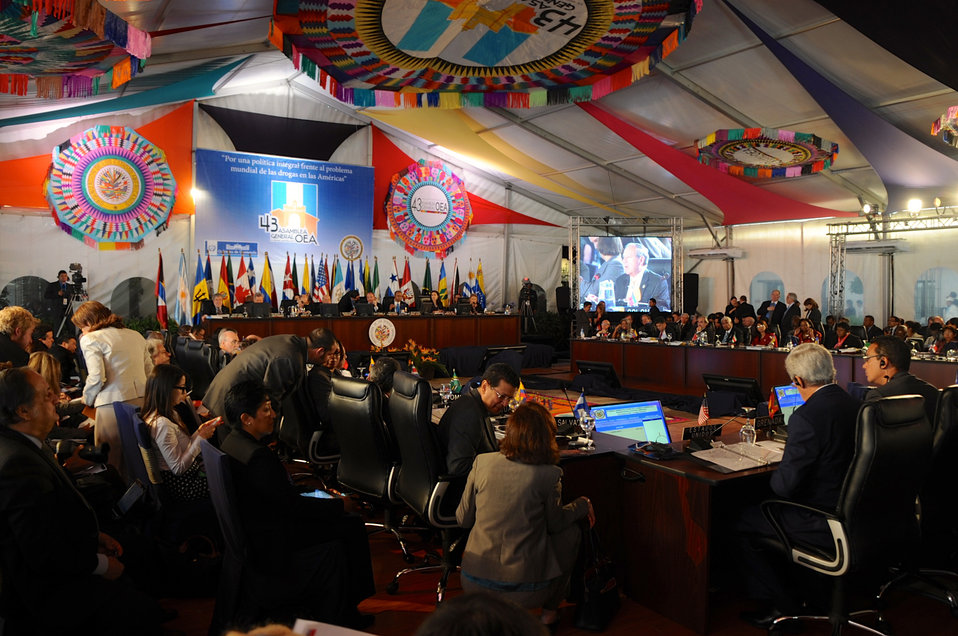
Secretary Kerry Participates in the OAS General Assembly Plenary Session

U.S. Secretary of State John Kerry participates in the General Assembly of the Organization of American States Plenary Session in Antigua, Guatemala, on June 5, 2013.